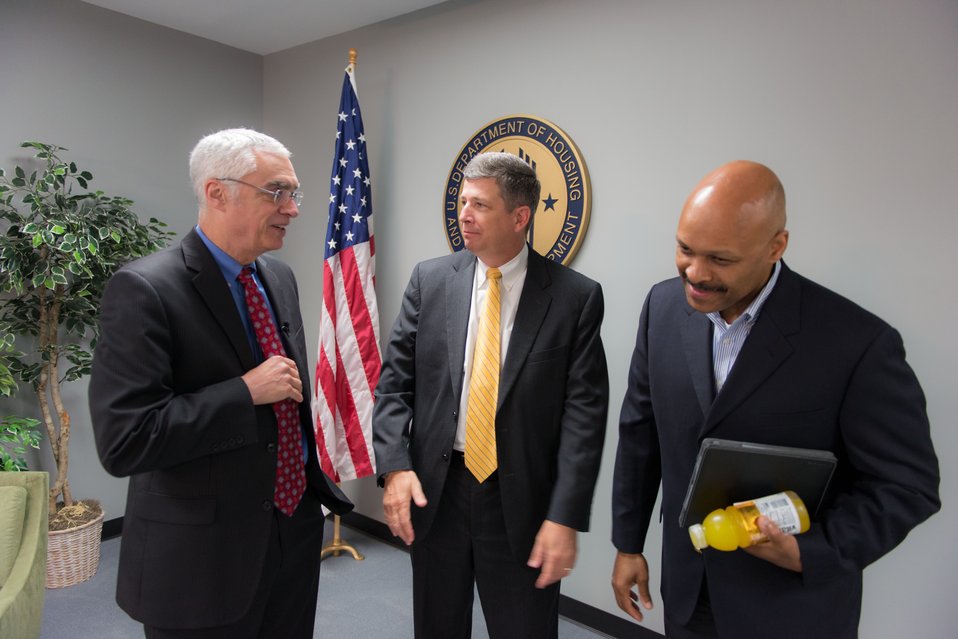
Before EPA, HUD, and DOT Twitter Town Hall

Acting Administrator Bob Perciasepe (EPA), Deputy Secretary John Porcari (DOT), and Deputy Secretary Maruice Jones (HUD) catch up before the Twitter town hall.
USEPA Photo by Eric Vance. Public domain image